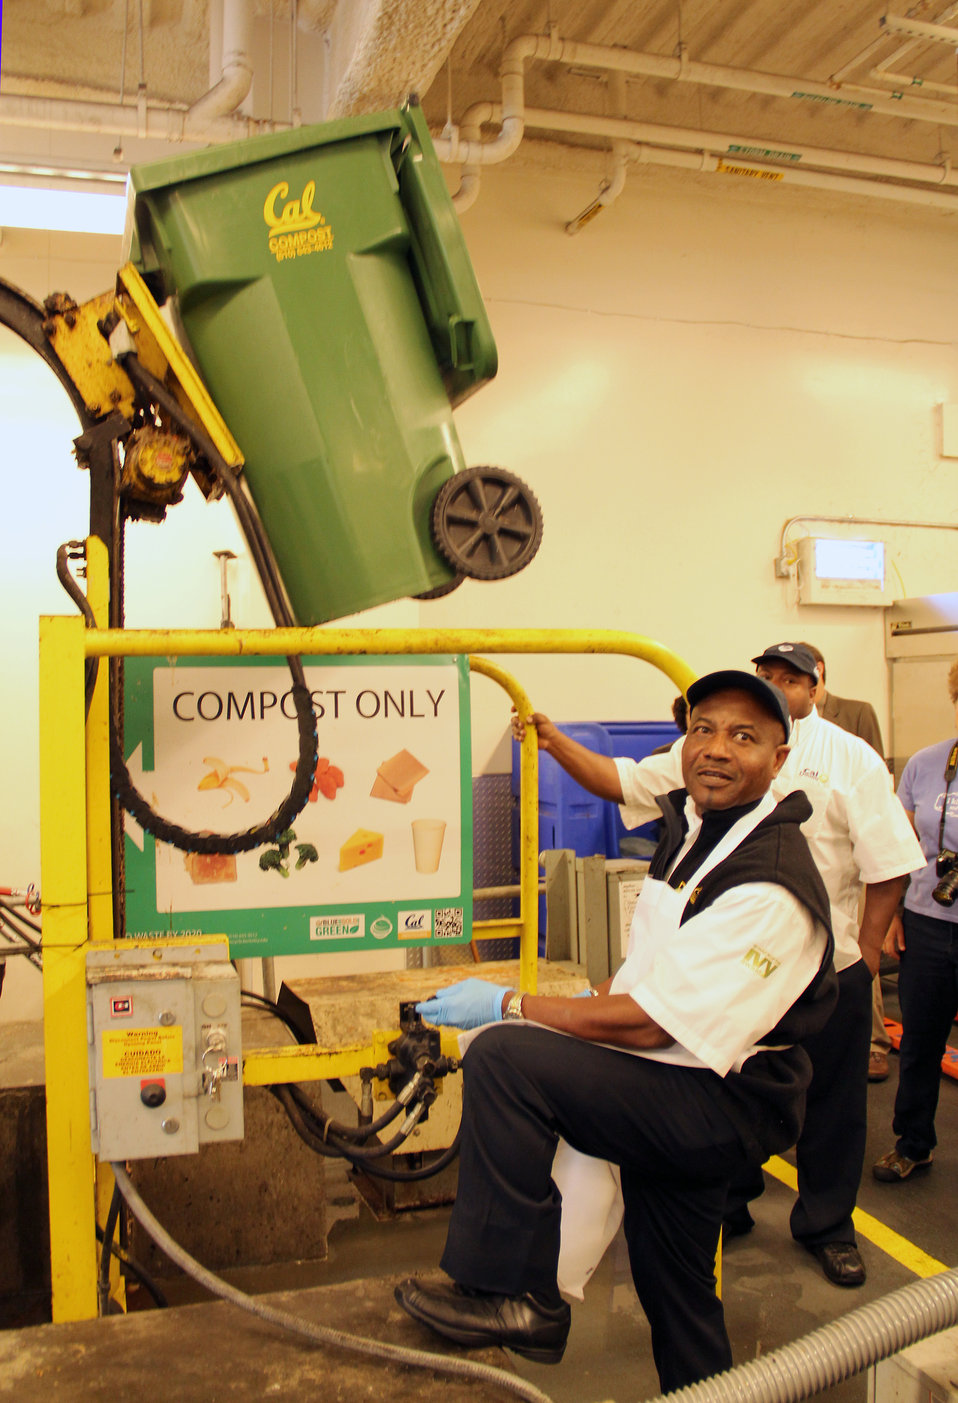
November 15, 2012, A Natural Step

After reducing waste at the source and donating any healthy, edible food - leftover food waste is composted at U.C. Berkeley.

Composting recycles the nutrients from food into a rich soil amendment that can be put right back on the ground to help grow more food!

Composting Basics for Facilities

More about the Food Recovery Challenge